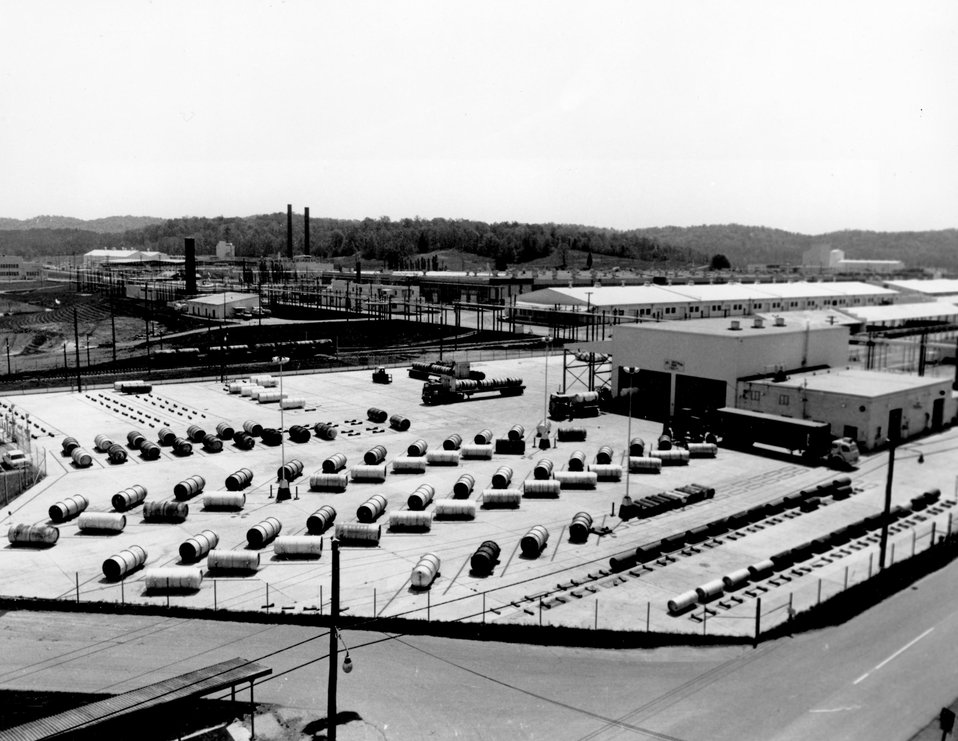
All uranium feed material for the Energy Research and Development Administration's Oak Ridge Gaseous Diffusion Plant is received at this site and all production is shipped from here. Circa 1975.